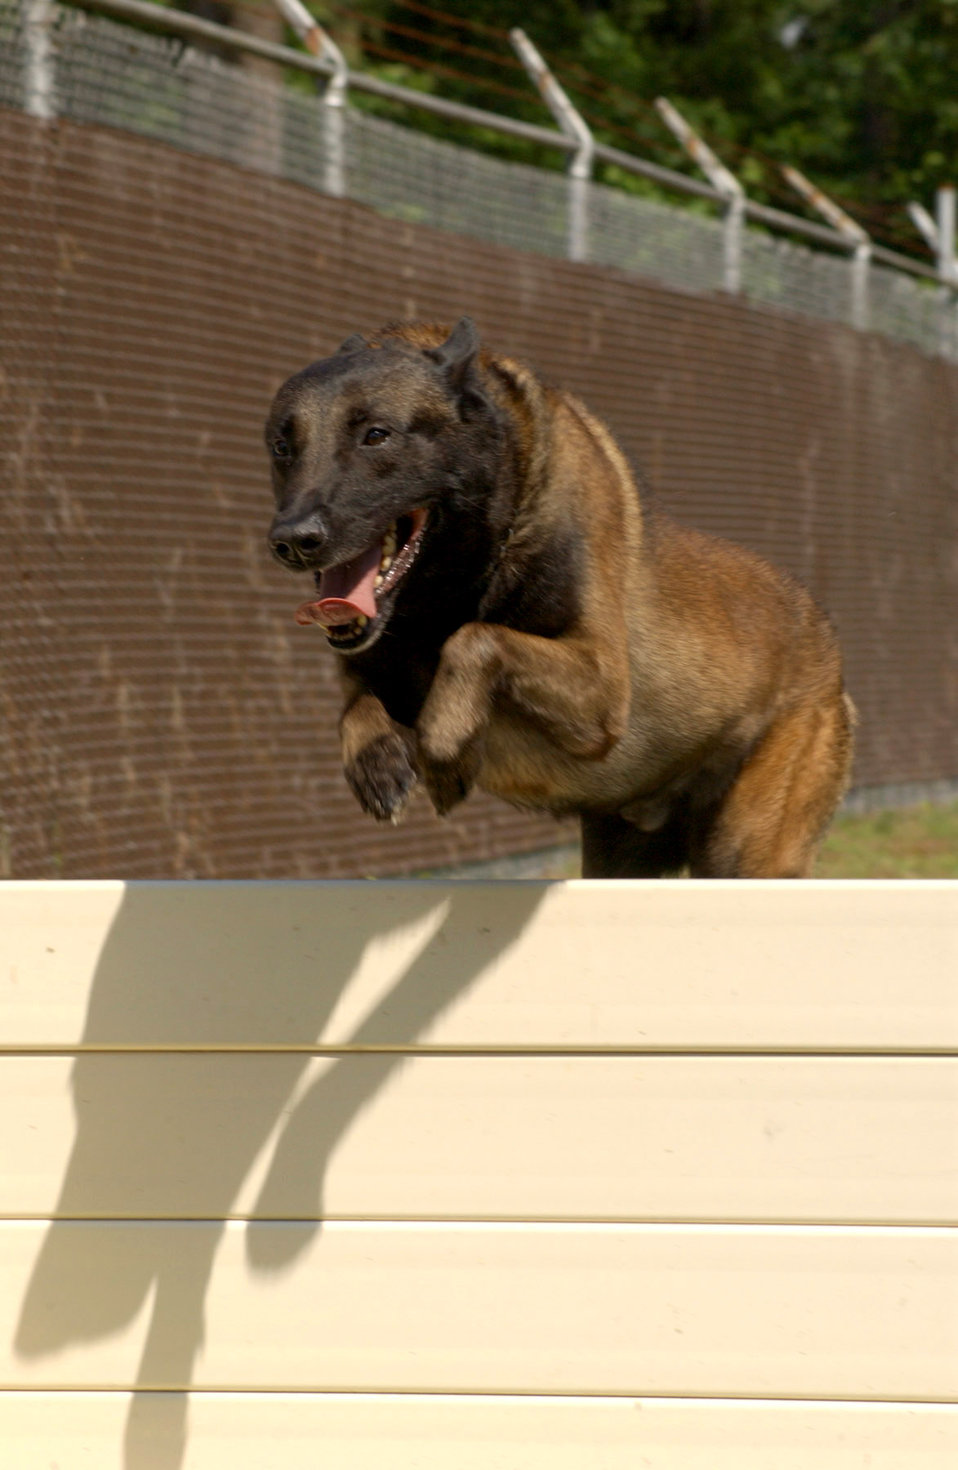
Military working dog Ralph

Ralph, a narcotics detection dog, jumps a hurdle at Seymour Johnson Air Force Base, N.C. Ralph is a Belgian Malinois valued at about $30,000 because of his training. He is a member of the 4th Security Forces Squadron.